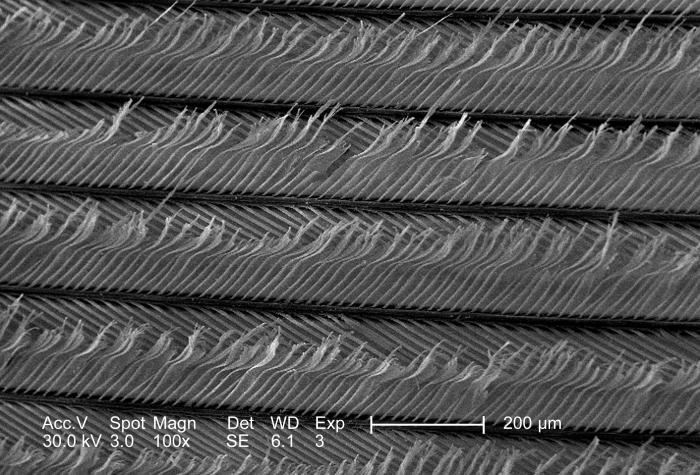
This scanning electron micrograph (SEM), at a moderate magnification of 100x, depicted the strut-like configuration of an unidentified bird feather found on the ground in the Decatur, Georgia suburbs.